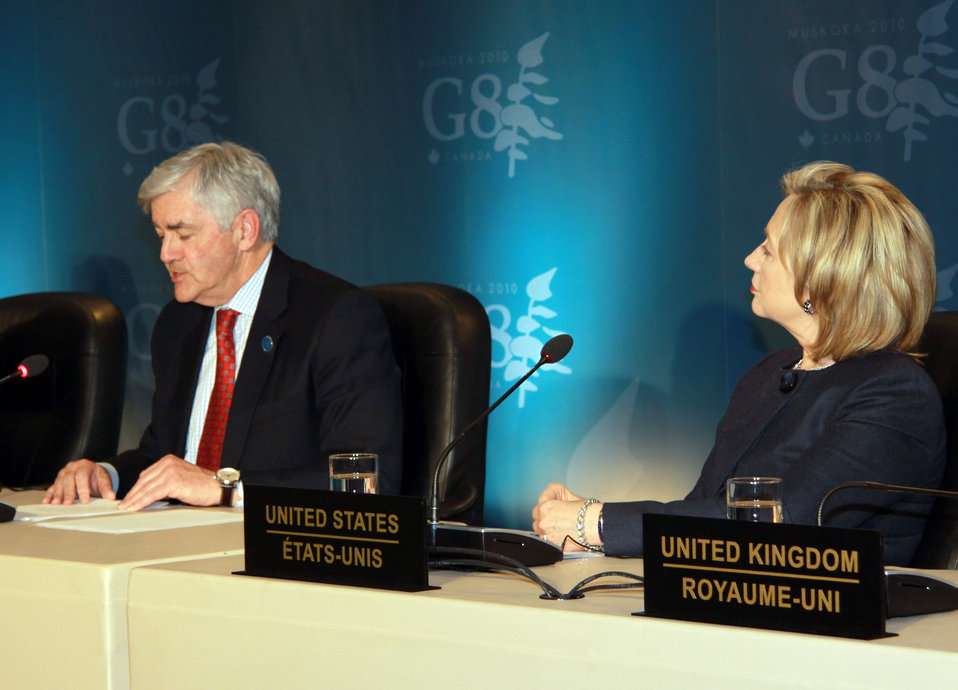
Secretary Clinton Participates in G8 Foreign Ministers Meeting Press Conference

U.S. Secretary of State Hillary Rodham Clinton and Canadian Minister of Foreign Affairs Lawrence Cannon participate in a press conference during the G8 Foreign Ministers Meeting in Ottawa, Canada March 29, 2010.